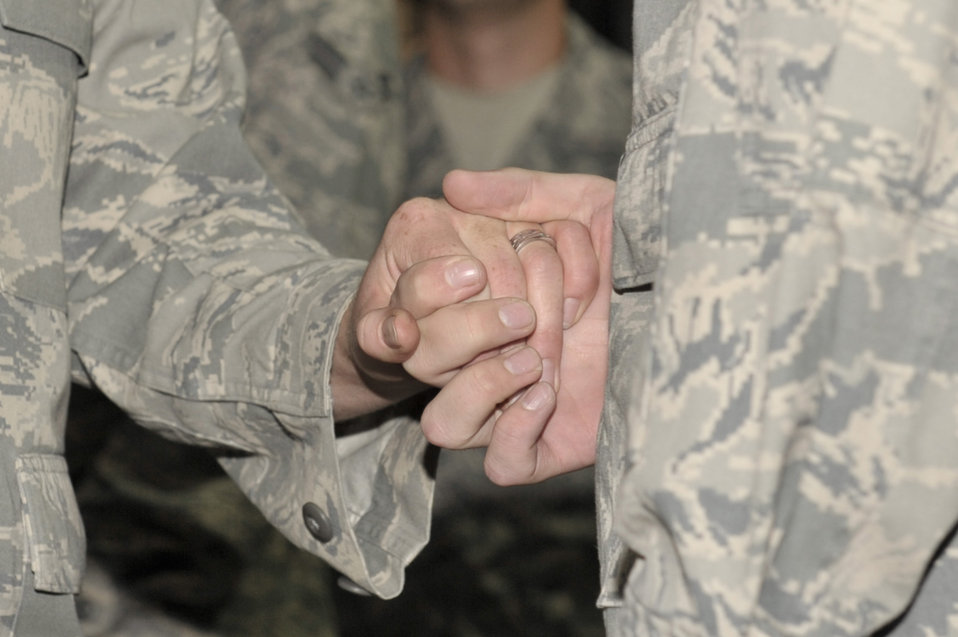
Couple's path to marriage

Senior Airman Sheri Nolen and Senior Airman Donald Nolen hold hands during their wedding ceremony Aug 4, 2010, at an air base in Southwest Asia. The Nolens are members of the 380th Expeditionary Aircraft Maintenance Squadron. They were married by proxy on July 12, 2010, through the state of Montana.